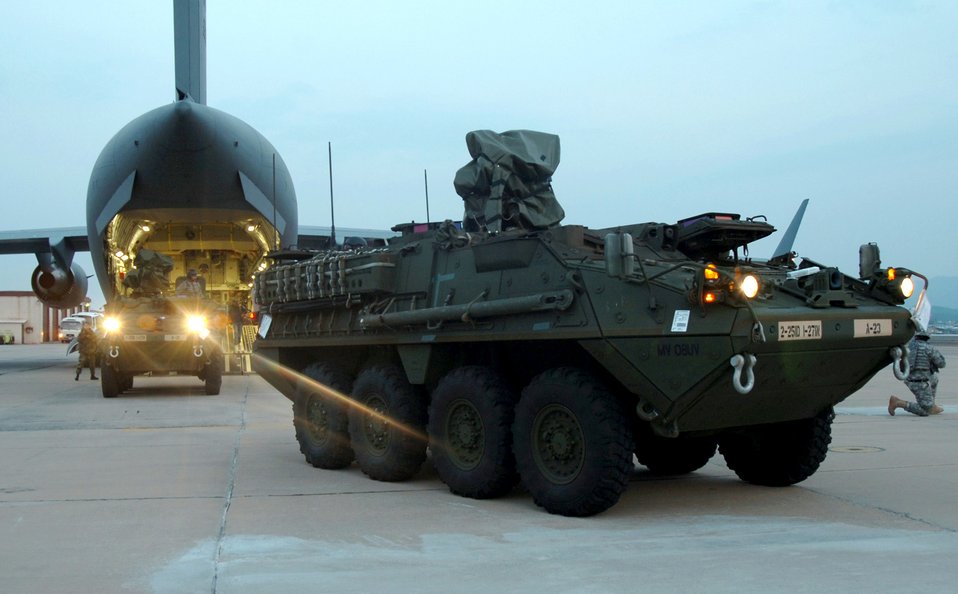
Globemaster delivers to Foal Eagle 2007

Two M1126 Stryker infantry carrier vehicles exit a C-17 Globemaster III March 18 in Daegu, South Korea, for Exercise Foal Eagle 2007. The focus of the exercise is on strategic, operational and tactical aspects of general military operations in the Korean theater of operations. Its intent is to demonstrate resolve to support the Republic of Korea against external aggression while improving ROK - U.S. combat readiness and joint and combined interoperability. The C-17 is from the 15th Airlift Wing at Hickam Air Force Base, Hawaii.